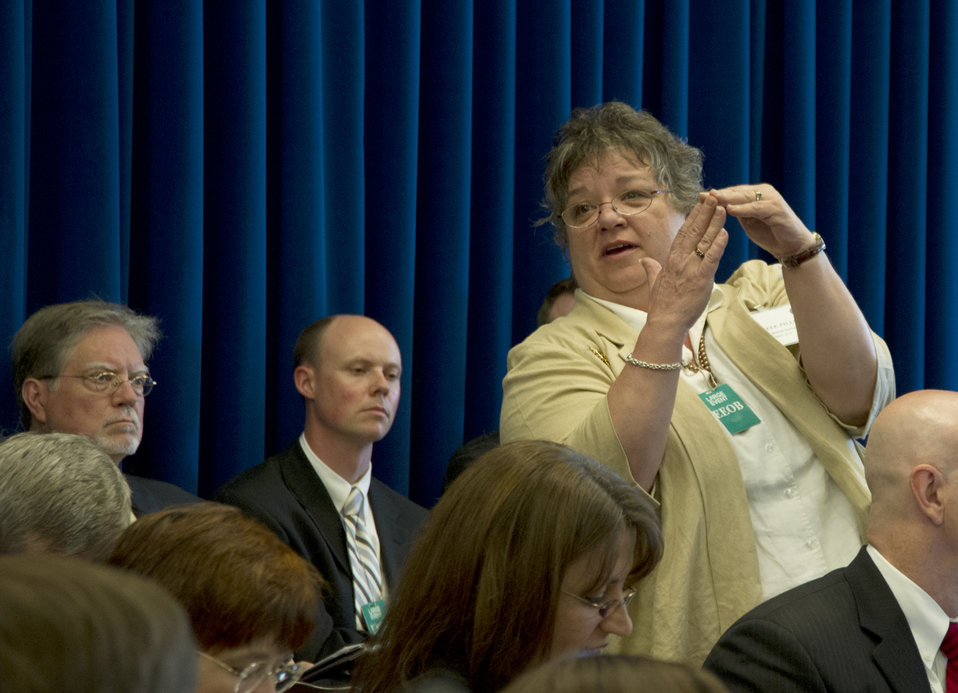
Michele Piller from California Plumas Rural Services speaking at the White House Forum on Regional Innovation in Rural America at the Eisenhower Executive Office Building, in Washington D.C., on Wednesday, June 13, 2012.